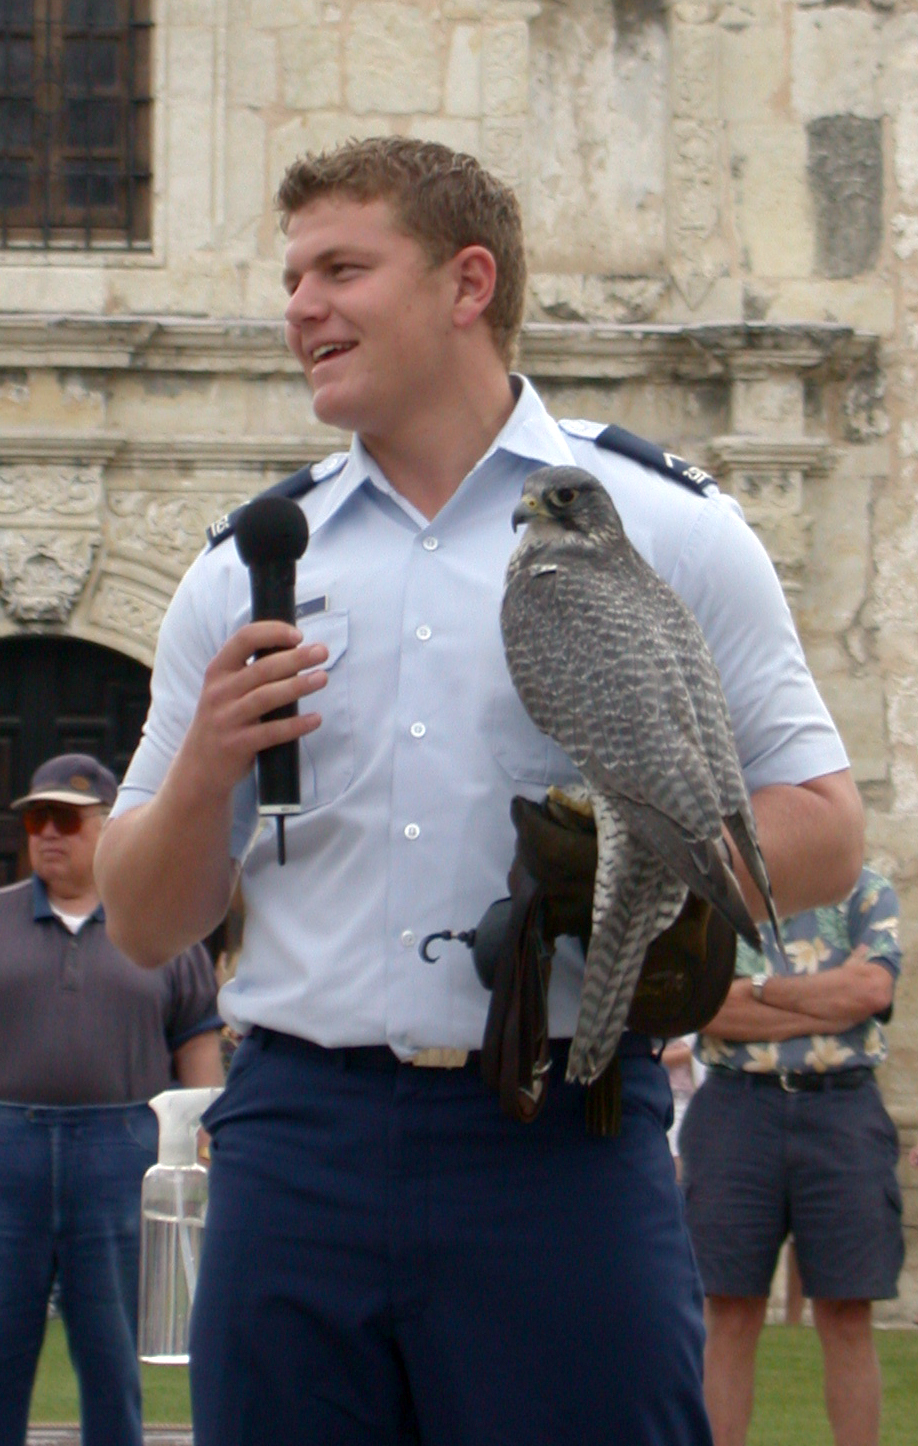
Falcon Fiesta

SAN ANTONIO -- Cadet 3rd Class Michael Cepak and Destiny, a gyrfalcon and U.S. Air Force Academy mascot, address the crowd outside the Alamo here April 19. Cadet Cepak and Destiny traveled from Colorado to San Antonio to take part in the city's annual Fiesta celebration and teach people about the academy and its falcon mascots.